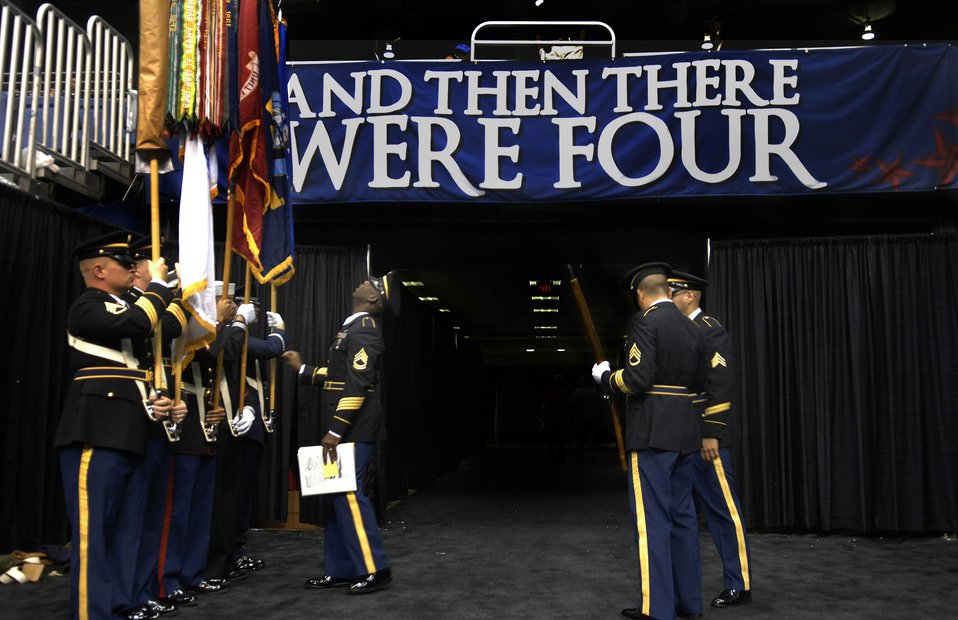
NCAA Final Four recognizes American servicemembers

Army Sgt. 1st Class Richard James checks flag positions as the a multiservice color guard prepares before the start of the College All-Star Basketball Game during the festivities leading up to the Final Four April 4 in San Antonio, Texas. The color guard is from Fort Sam Houston, Texas.